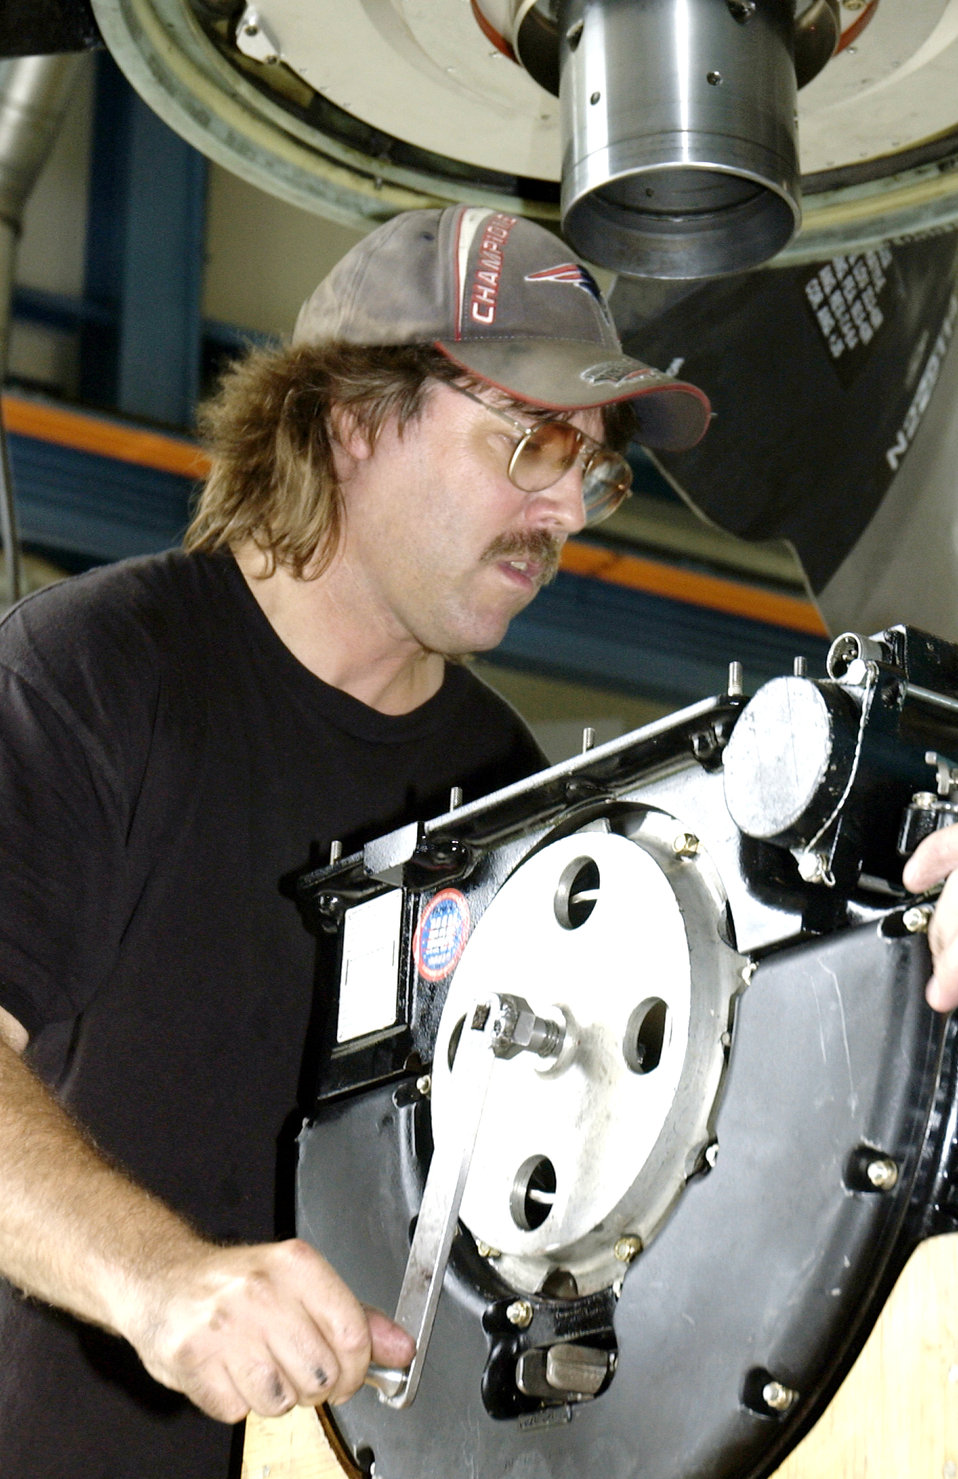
Battlelab demonstrates new propeller balancing system

MCGUIRE AIR FORCE BASE, N.J. -- Wayne Schadler installs an integral oil control on a C-130 Hercules engine that has the new in-flight propeller balancing system. The Air Mobility Battlelab here installed the new system on a C-130 assigned to the 913th Airlift Wing from Willow Grove Air Reserve Station, Pa. Mr. Schadler is a technician assigned to the 913th Maintenance Group.